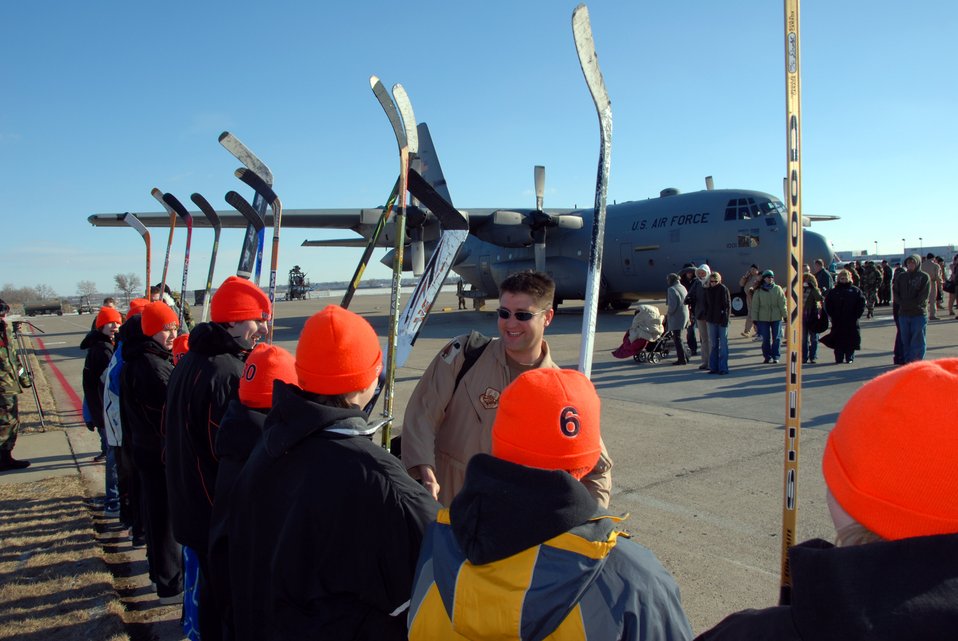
Welcome home coach

Members of the